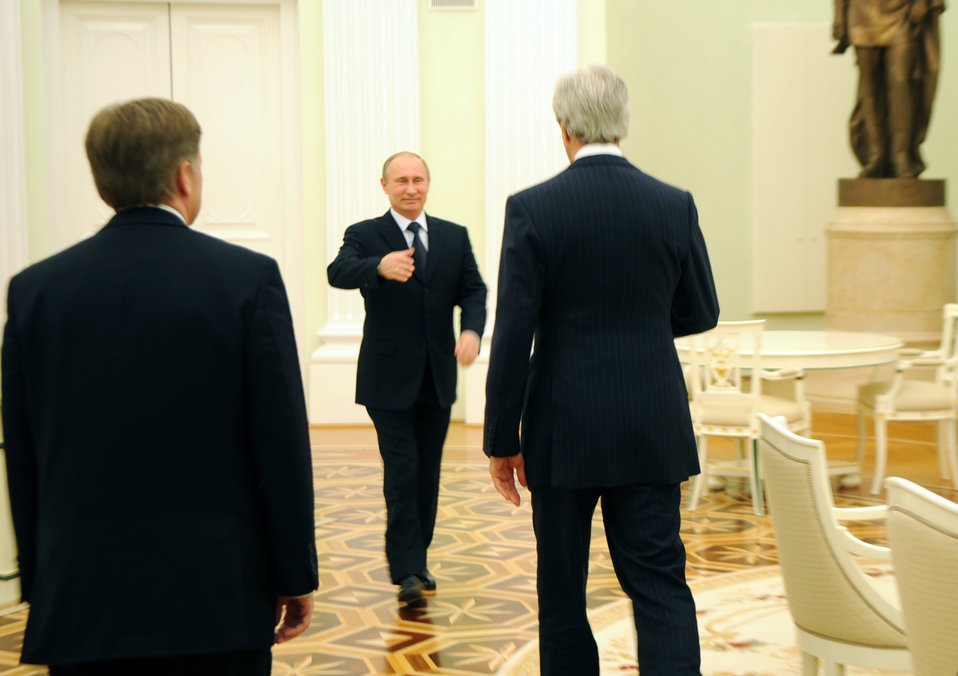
Secretary Kerry Is Greeted By Russian President Putin

U.S. Secretary of State John Kerry, accompanied by U.S. Ambassador to Russia Michael McFaul, is greeted by Russian President Vladimir Putin in Moscow, Russia, on May 7, 2013.